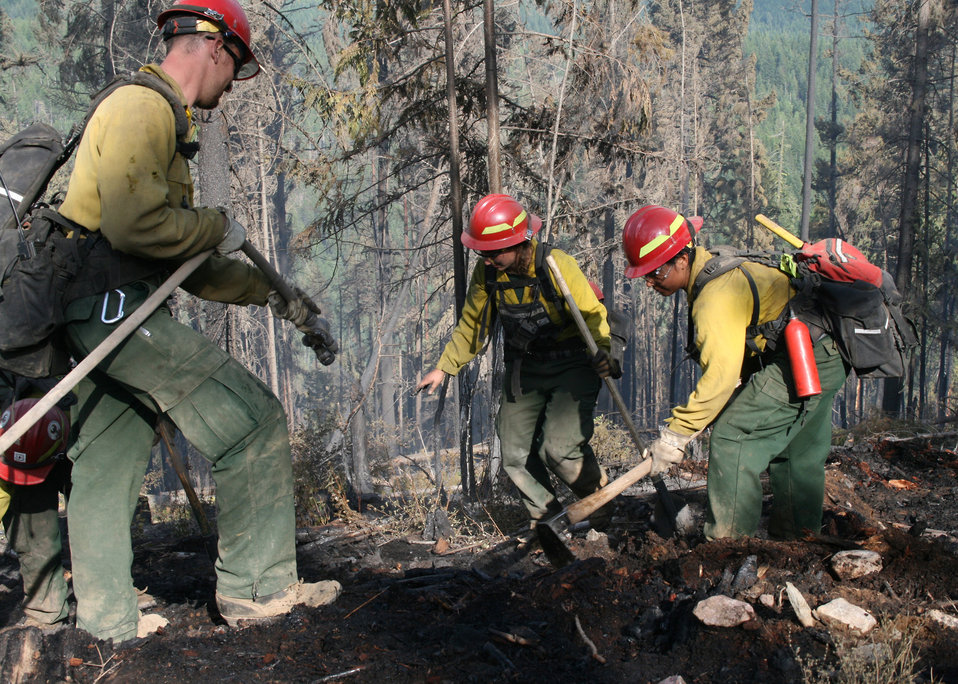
Firefighters supported by three fire engines, two helicopters, two water tenders, a dozer and an air tanker battled to contain the 90 acre Rogers Fire located on Mt. Rogers five miles west of Aladdin, WA on the Colville National Forest. Firefighters worked under adverse conditions with steep terrain and gusting winds to reduce the loss of timber and protect the Rogers Mountain Trail. The Rogers Fire began on Aug. 9, 2011 and was controlled by Aug. 19, 2011 with mop up crews ensuring that no flare-ups occurred. Colville National Forest has 1.1 million acres in northeastern Washington and includes the Kettle River, Selkirk Mountain ranges, and the upper reaches of the Columbia River.